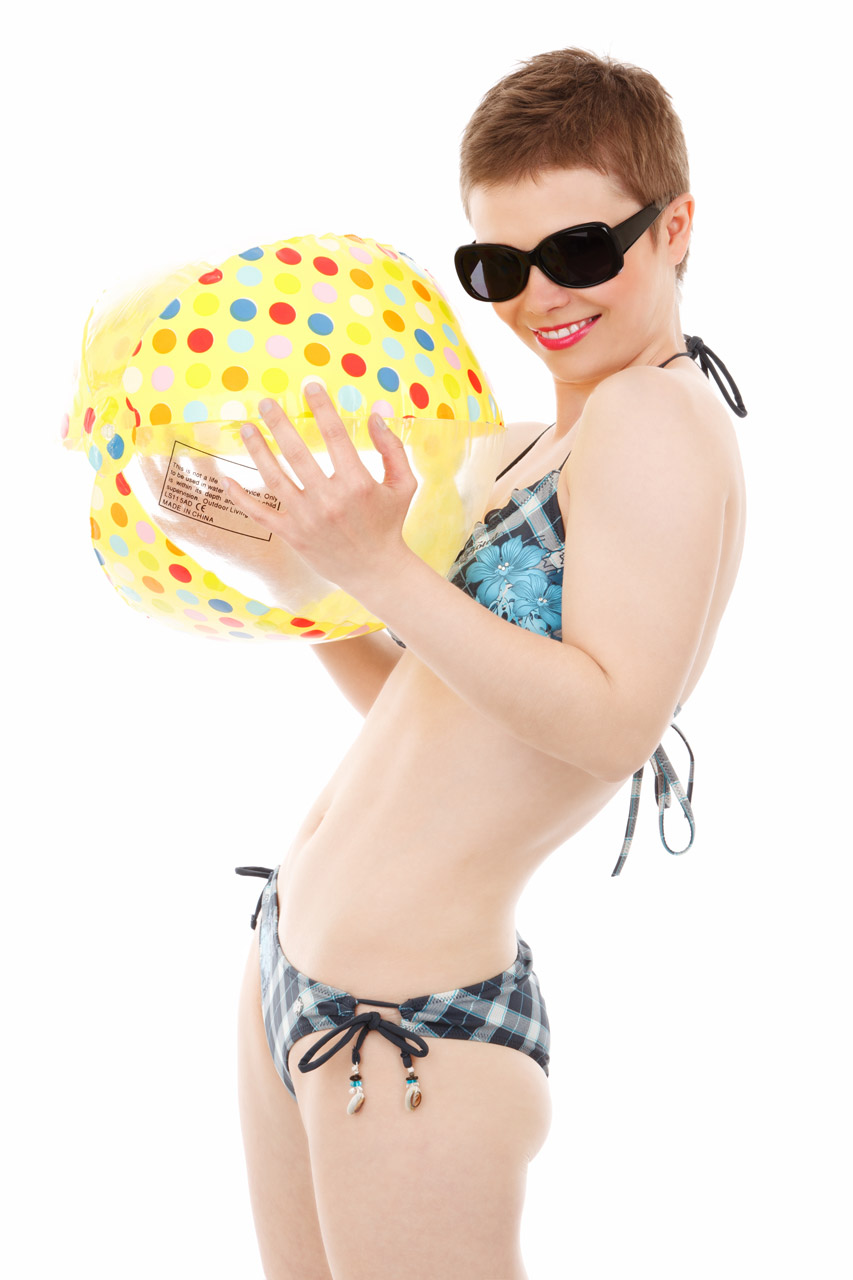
Summer ready

Young woman in bikini with a beach ball and dark sunglasses isolated on white background.